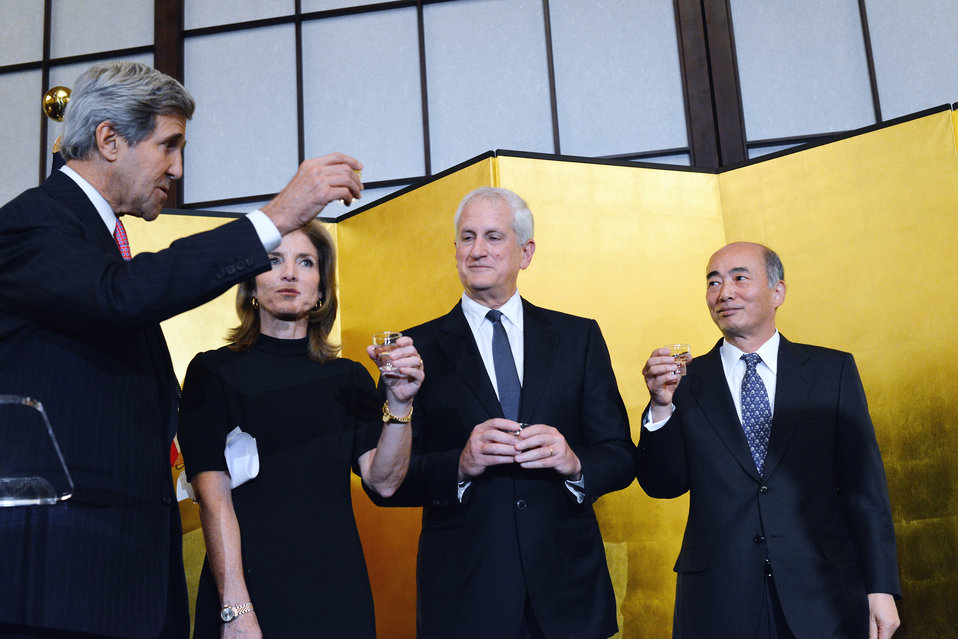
Secretary Kerry Toasts the U.S.-Japan Relationship

U.S. Secretary of State John Kerry toasts the U.S.-Japan relationship at a reception in honor of U.S. Ambassador to Japan Caroline Kennedy and her husband, Dr. Edwin Schlossberg, at Japanese Ambassador to the U.S. Kenichiro Sasae's residence in Washington, D.C., on November 12, 2013.